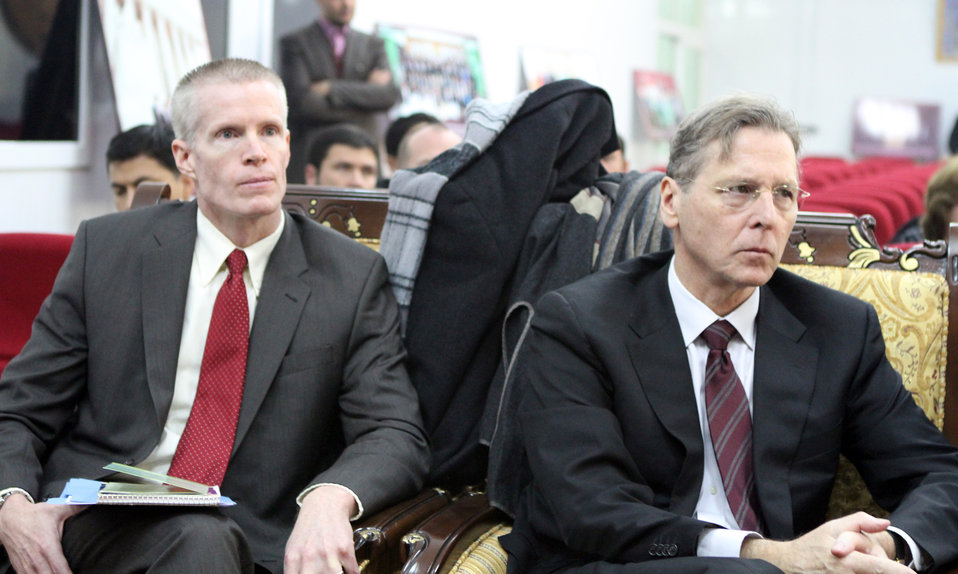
Afghanistan Final National Round of the 2013 Philip C.Jessup International Law Moot Court Competition